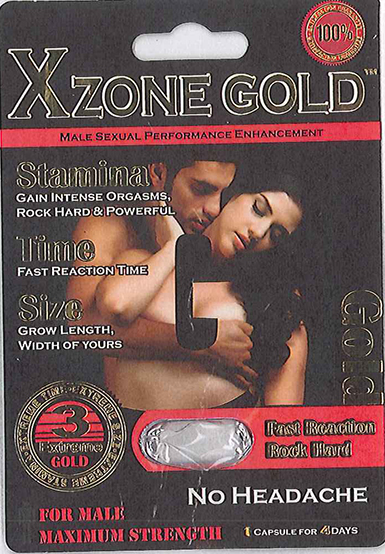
RECALLED – Dietary Supplement

April 1, 2014 – Product Recall – Nova Products, Inc. Issues Voluntary Nationwide Recall of Dietary Supplements with Undeclared Active Pharmaceutical Ingredients.